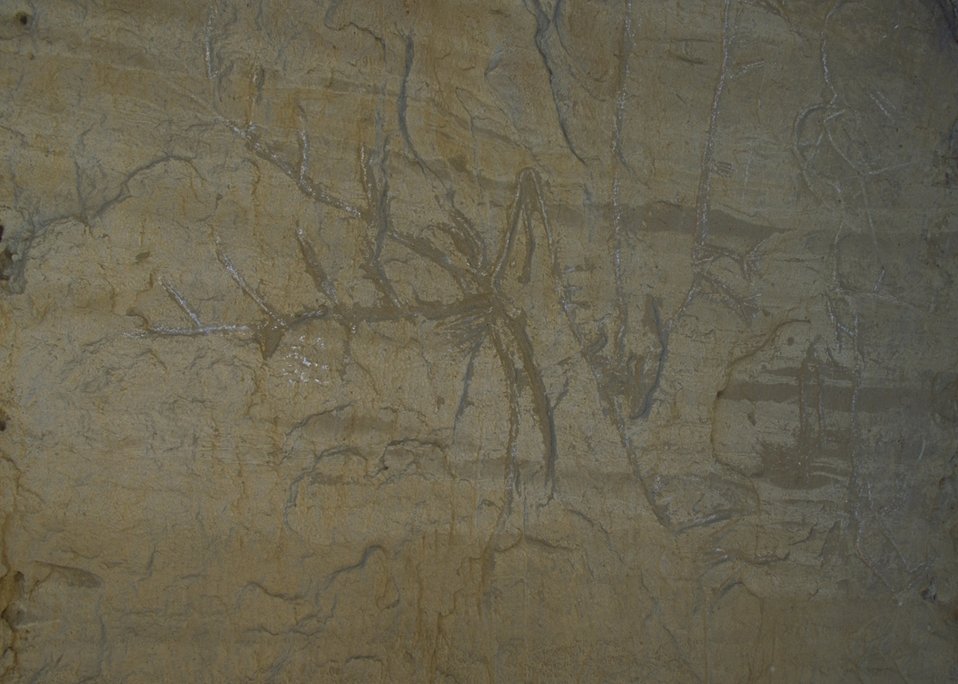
White Mountain Petroglyphs, Rock Springs Field Office.